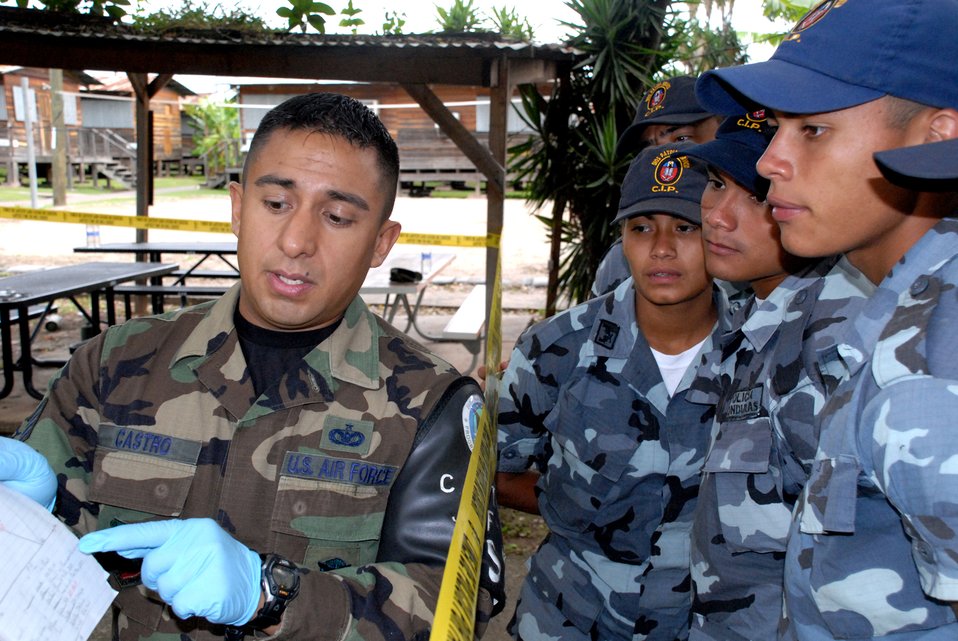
CSI Honduras: JSF teaches crime scene processing to Honduran police

Staff Sgt. Edgar Castro, joint security forces, explains crime scene processing paperwork to students from the La Paz Police Academy during a training course here. The crime scene processing class is one in a series of classes taught this year, with other lessons involving handcuff procedures, high-risk traffic stops and riot control.